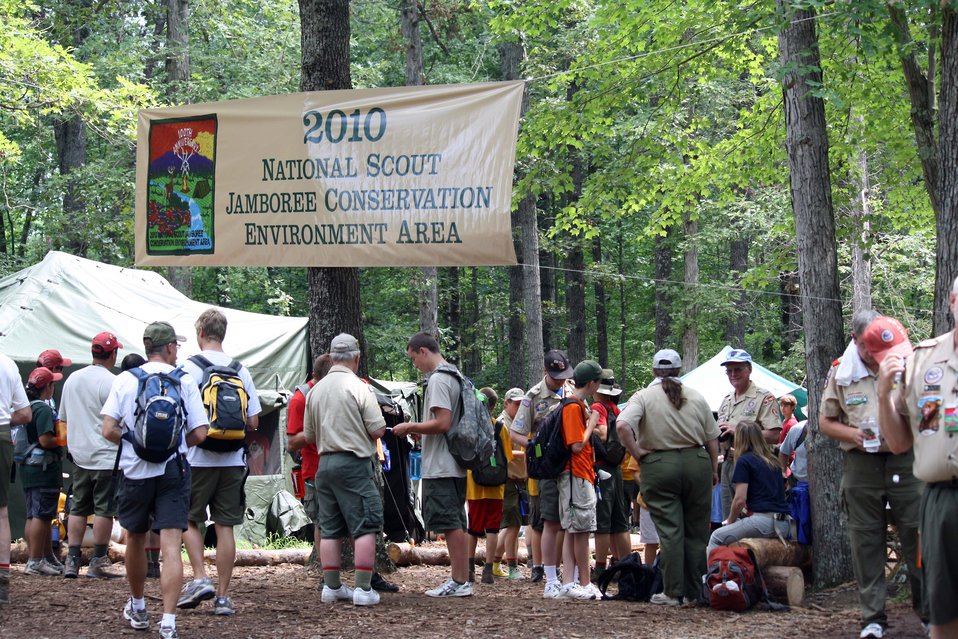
Boy Scout Jamboree 2010